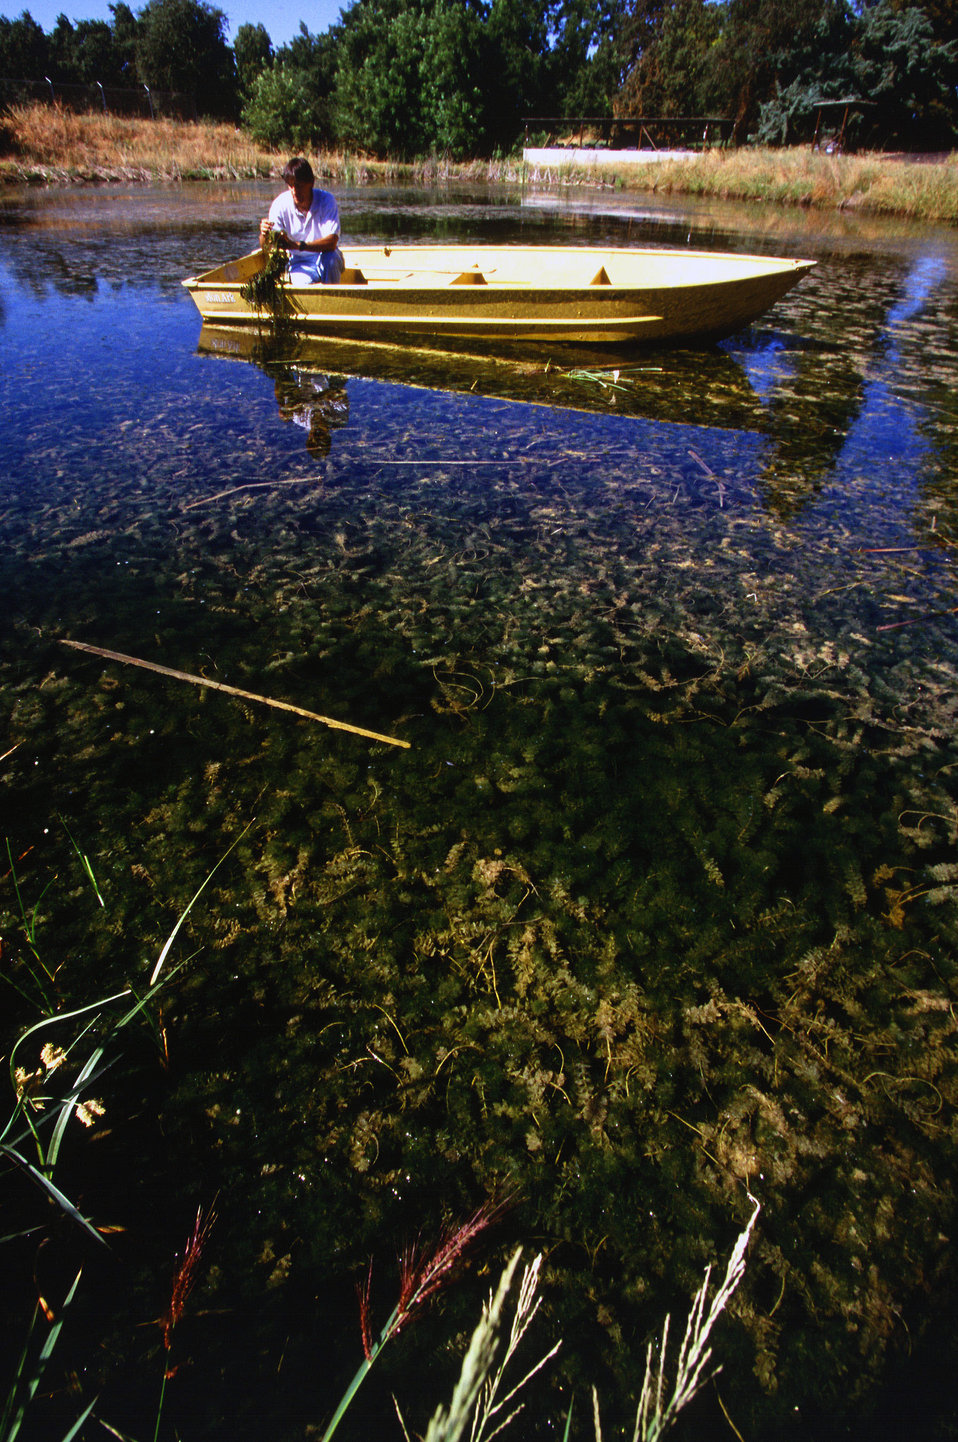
In cooperation with University of California scientist and others, U.S. Department of Agriculture (USDA) Agricultural Research Service (ARS) plant pathologist Lars Anderson researches treatments that will stem the growth of aquatic weeds such as Eurasian watermilfoil.